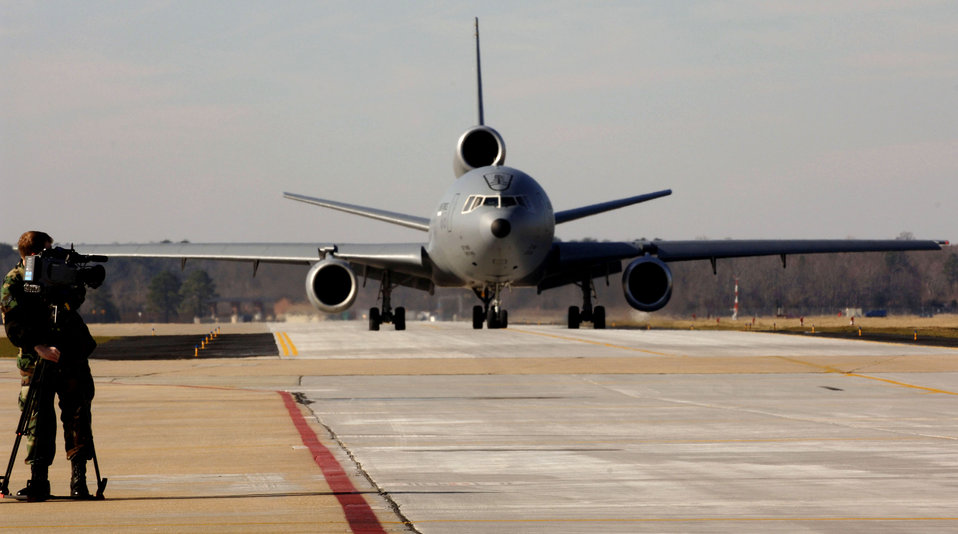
Raptors head to Red Flag

Senior Airman Matthew Clouse videotapes the departure of F-22 Raptors from the 94th Fighter Squadron and a KC-10 Extender carrying maintainers from the 94th Aircraft Maintenance Unit Feb. 3 at Langley Air Force Base in Virginia. The 94th Fighter Squadron and Aircraft Maintenance Unit are deploying to Nellis Air Force Base in Nevada for Red Flag. Red Flag is an air combat training exercise designed to test pilots and air support crews' ability to affectively respond to real-world combat scenarios. This is the first deployment to Red Flag for the 94th FS with F-22s. Colonel Smith is the 94th FS commander. Airman Clouse is a broadcaster with Air Combat Command Public Affairs.